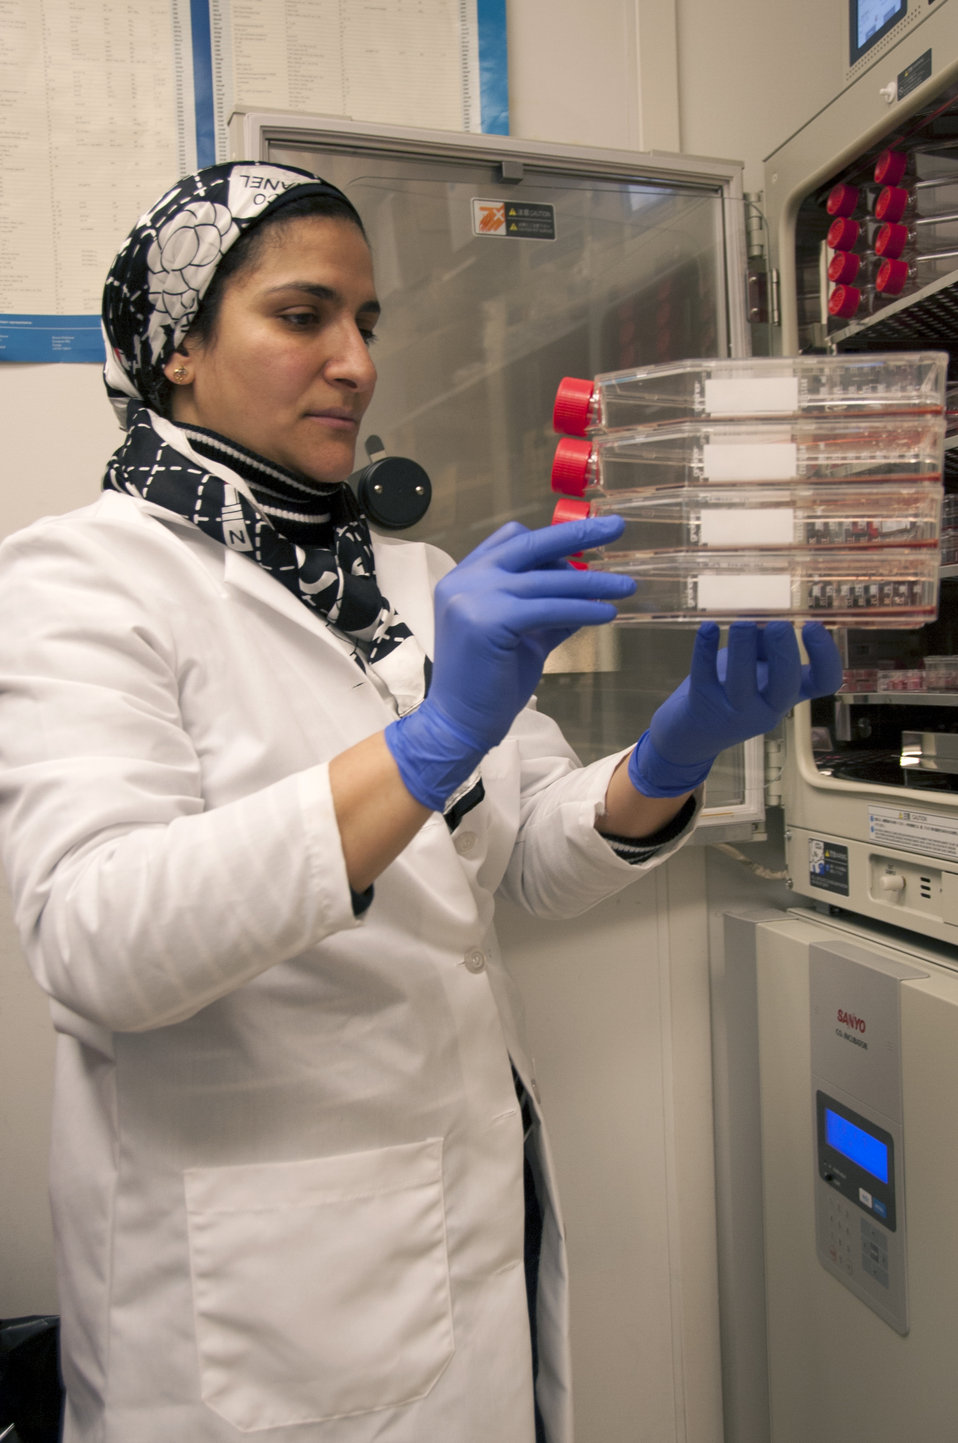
Stem Cell Research (0495)

Heba Degheidy, M.D., Ph.D., a post-doctoral research fellow at FDA, stores stem cell samples for analysis in an FDA laboratory on the National Institutes of Health campus in Bethesda, Md.

To learn more about stem cell research, read this FDA Consumer Update:

Adult Stem Cell Research Shows Promise

This photo is free of all copyright restrictions and available for use and redistribution without permission. Credit to the U.S. Food and Drug Administration is appreciated but not required.

Privacy and use information: www.flickr.com/people/fdaphotos/